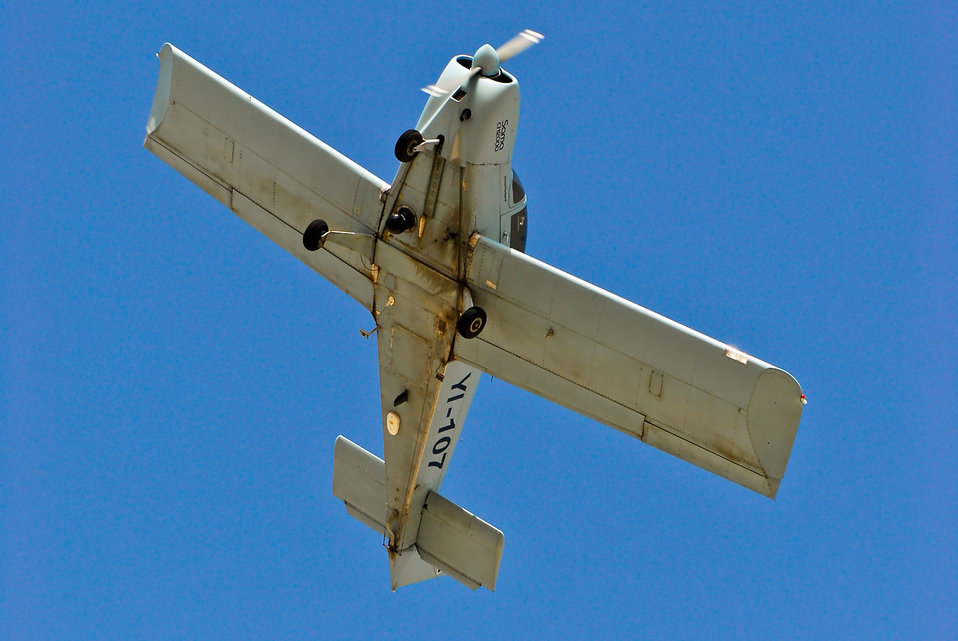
Air Force commander 'ecstatic' at Iraqi coordination

Iraqi aircraft serve as the 'eye in the sky' during a training exercise between Iraqi army and air force units at Camp Wessam, Iraq, Sept. 12, 2009.